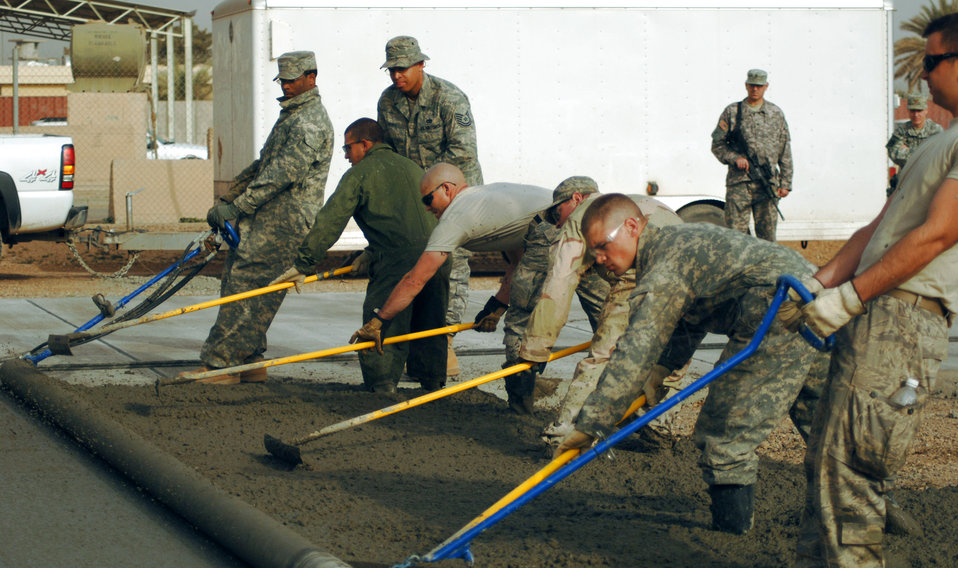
Set in stone

Construction equipment operators with the 332nd Expeditionary Civil Engineer Squadron at Joint Base Balad, Iraq, complete a 76-meter concrete pad Feb. 15 during a construction project at the base.